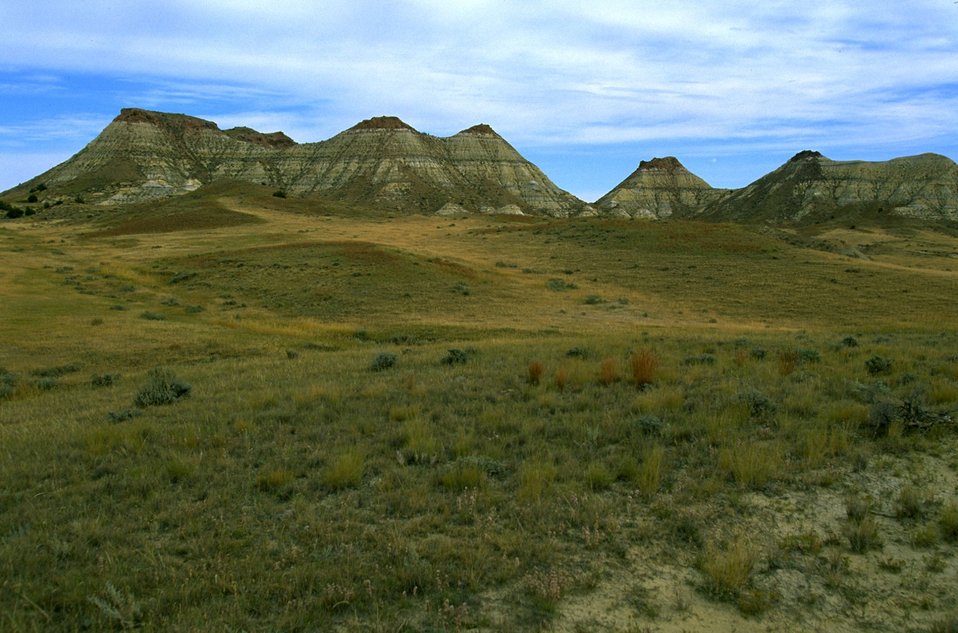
Grassy valley below hills in the Terry Badlands